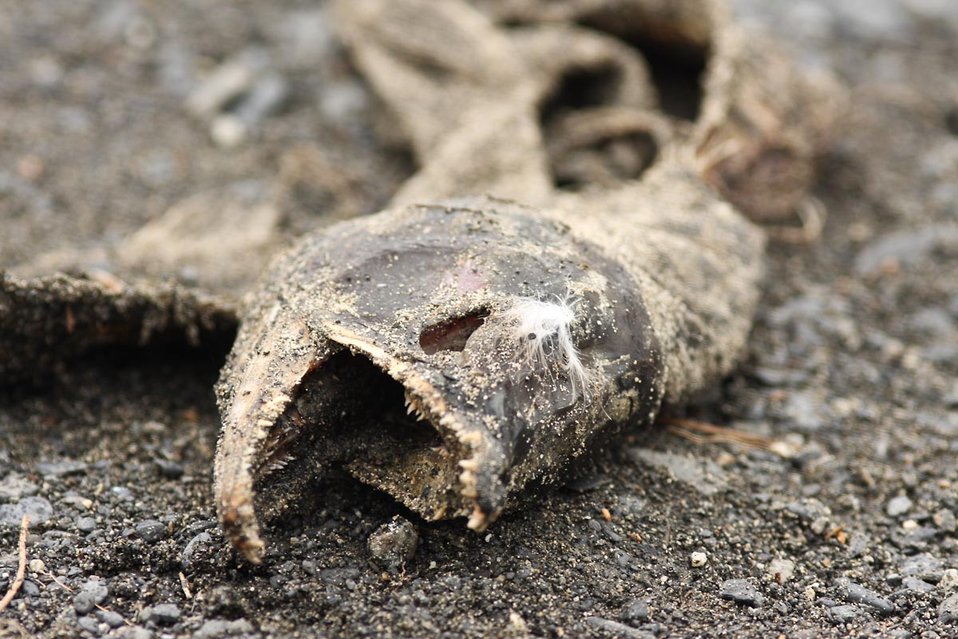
Salmon carcass

Lisa Hupp/USFWS
Source: Kodiak NWR
Migrating species of Pacific Salmon return to many of the rivers on Kodiak Island. After spawning, their bodies often wash up on gravel bars, providing an easy dinner for scavengers.